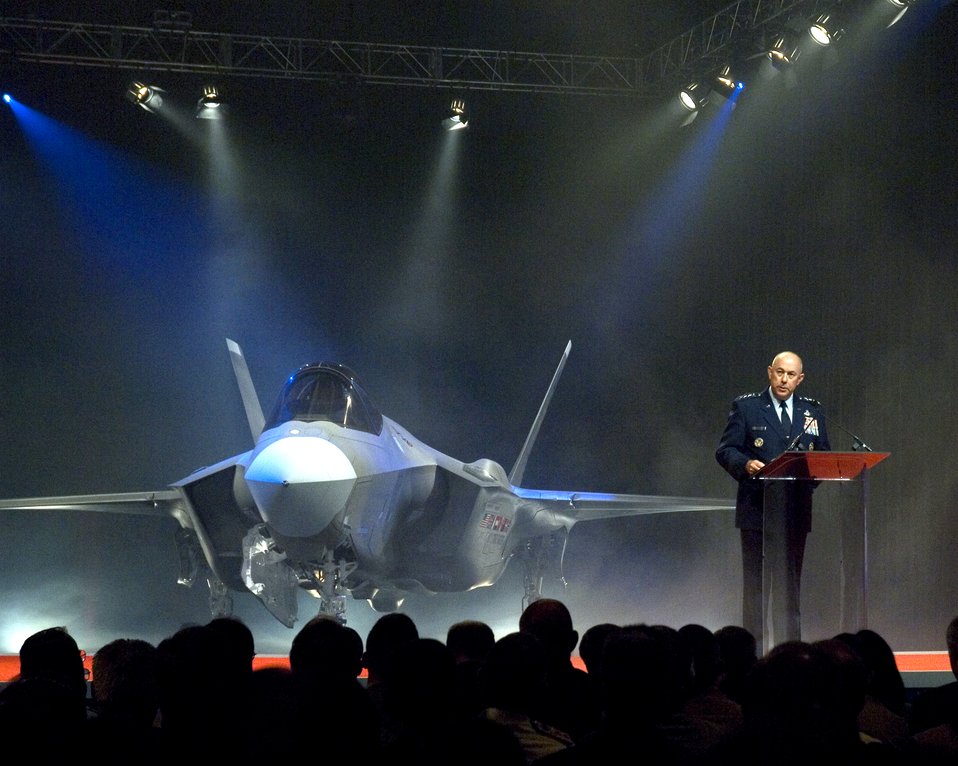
Lightning II makes debut

Air Force Chief of Staff Gen. T. Michael Moseley announces Lightning II as the name selected for the new Lockheed Martin F-35 during the inauguration ceremony at the Lockheed Martin plant in Fort Worth, Texas, on July 7.